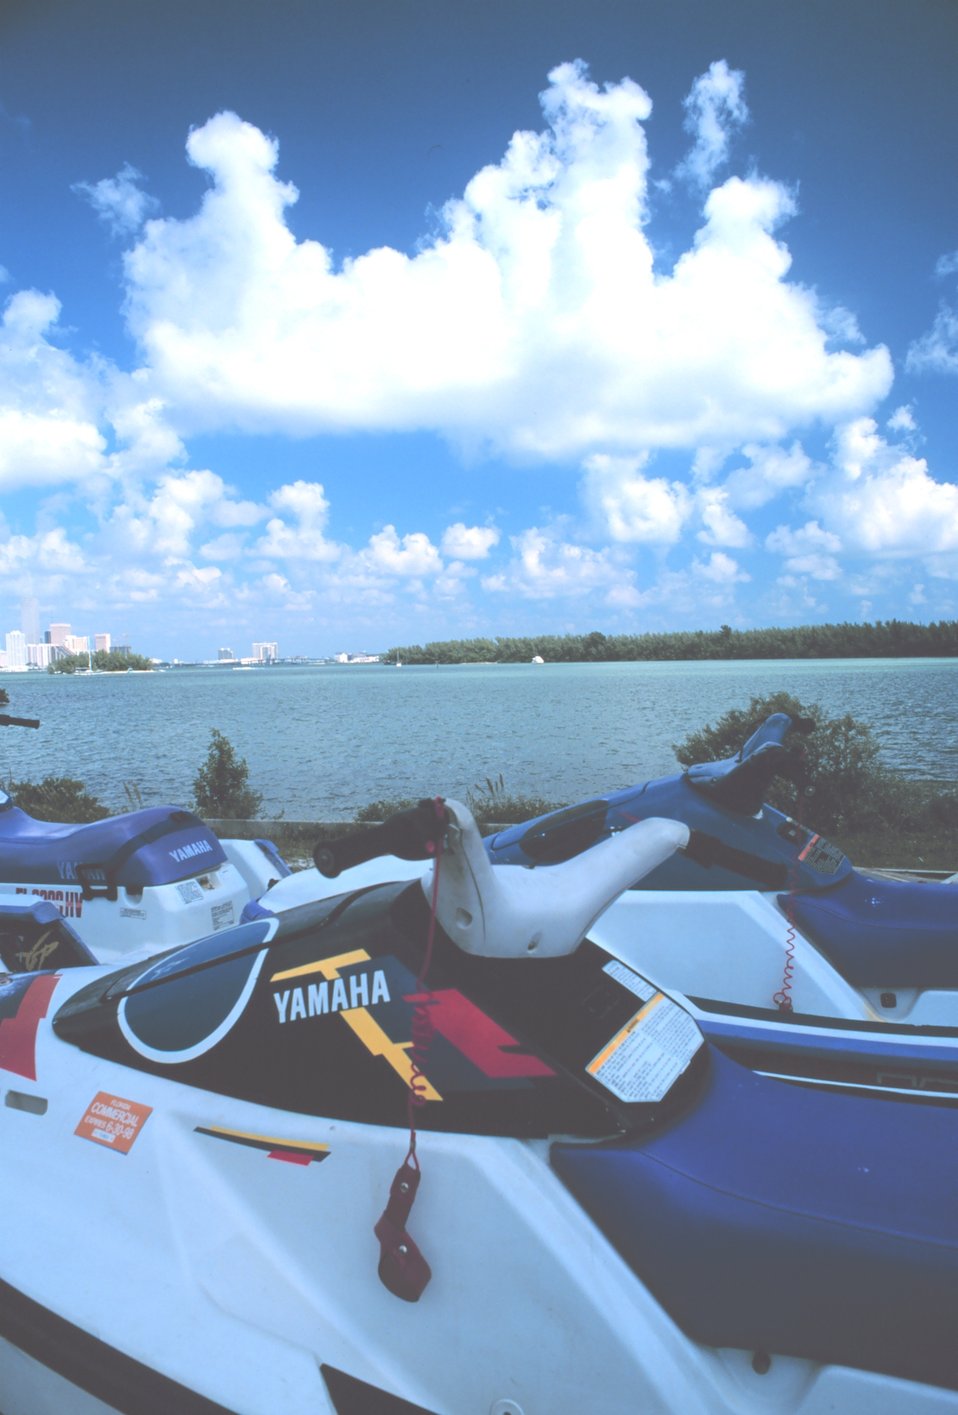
Ski Boats for rent on the shores of Key Biscayne